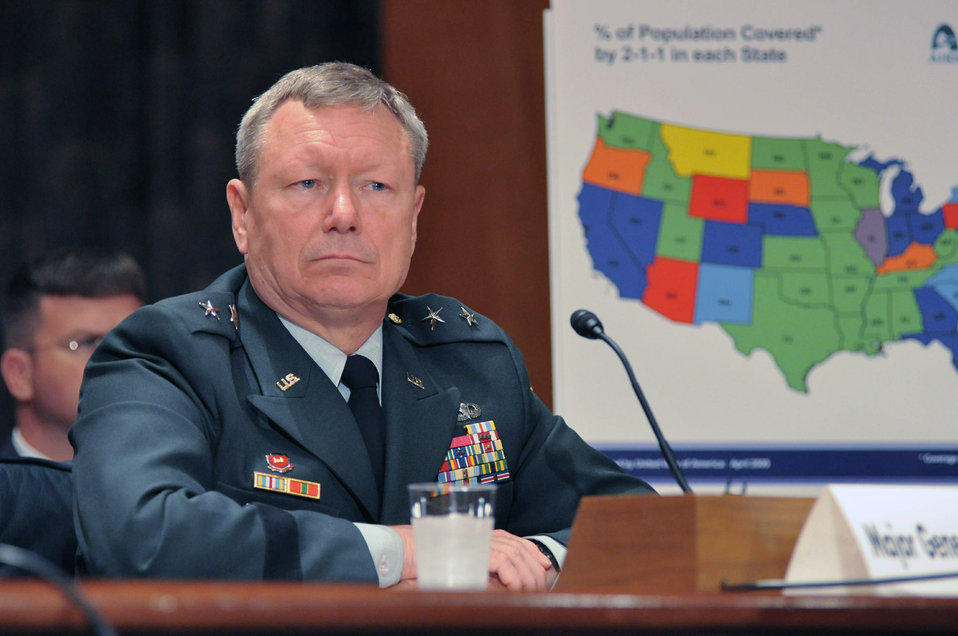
FEMA says National Guard essential to hurricane response

Army Maj. Gen. Frank Grass tells the Senate Committee on Homeland Security and Governmental Affairs Ad Hoc Subcommittee on Disaster Recovery that the National Guard and U.S. Northern Command stand ready to support civil authorities in the 2009 hurricane seasonon June 4 in Washington, D.C. General Grass is the director of operations for U.S. Northern Command.